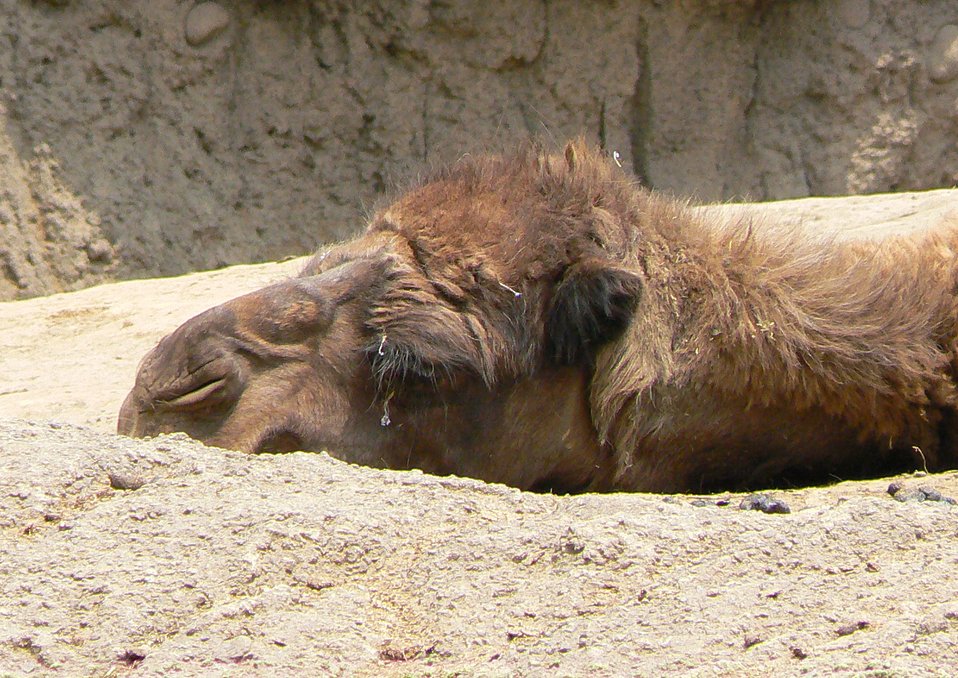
Camelus dromedarius in mexico city zoo